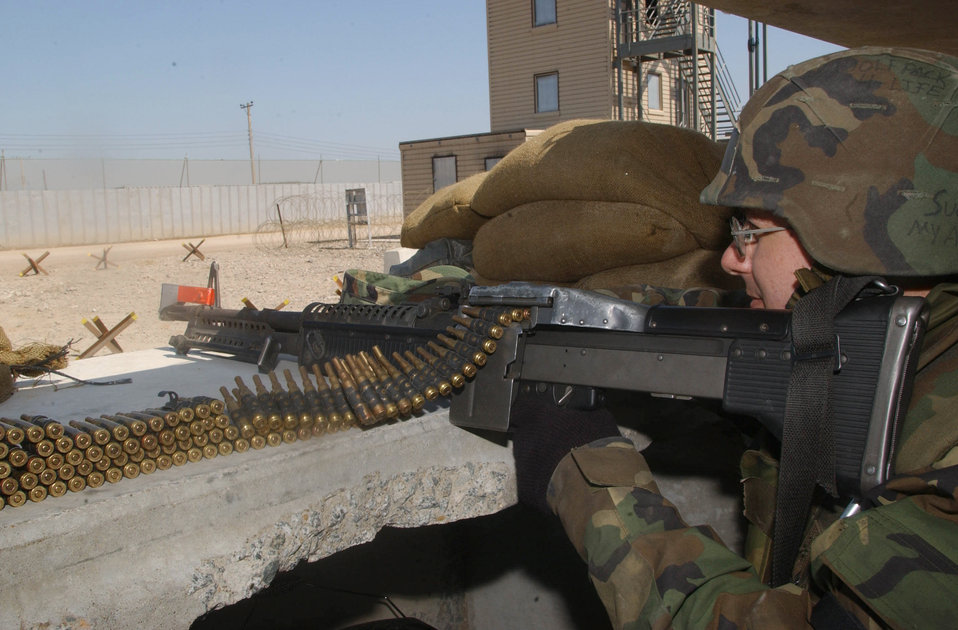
Armed and dangerous

KUNSAN AIR FORCE BASE, Republic of South Korea -- Staff Sgt. Cory Miles stands ready to attack while guarding the entry control point to the RED HORSE compound during Exercise Beverly Bearcat 05-03 here April 4. Sergeant Miles is a member of the 554th RED HORSE Squadron.